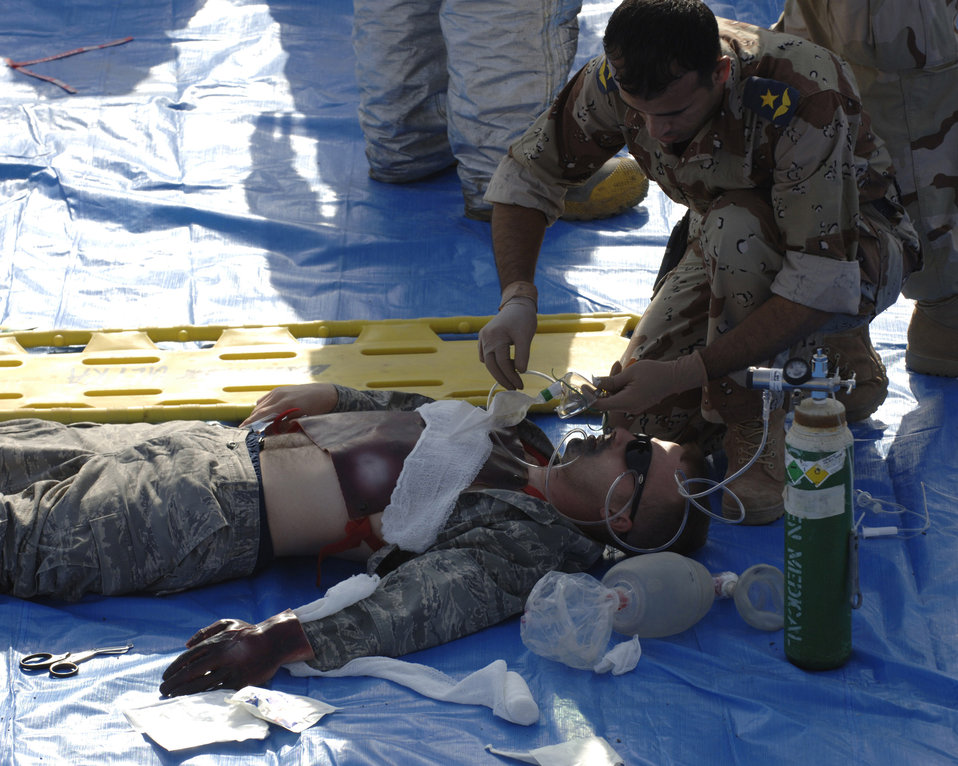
Internal training key to Iraqi air force independence

An Iraqi medic gives oxygen to a U.S. Airman mock casualty during a major accident response exercise Nov. 21 at New Al-Muthana Air Base, Iraq. The exercise tests the abilities of a joint response of fire rescue, medical and security capabilities.